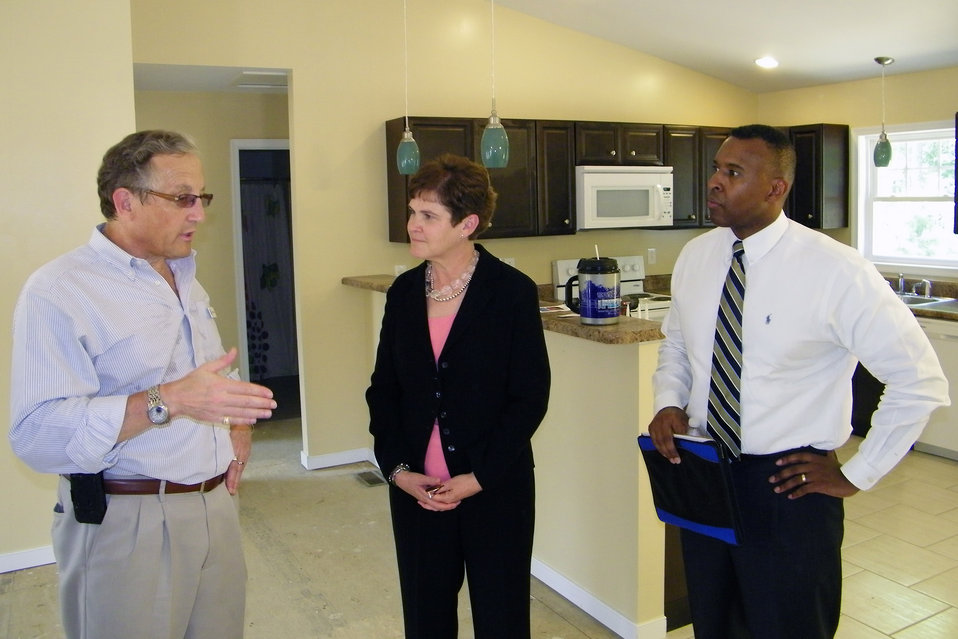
Agriculture Deputy Secretary Krysta Harden tours a Habitat for Humanity project in Ashland, VA with Executive Director for Hanover Habitat For Humanity Tim Bowring, and U.S. Department of Agriculture (USDA) Rural Development (RD) Virginia State Director Dr. Basil Gooden as part of Homeownership Month on Wednesday, Jun. 11, 2014.